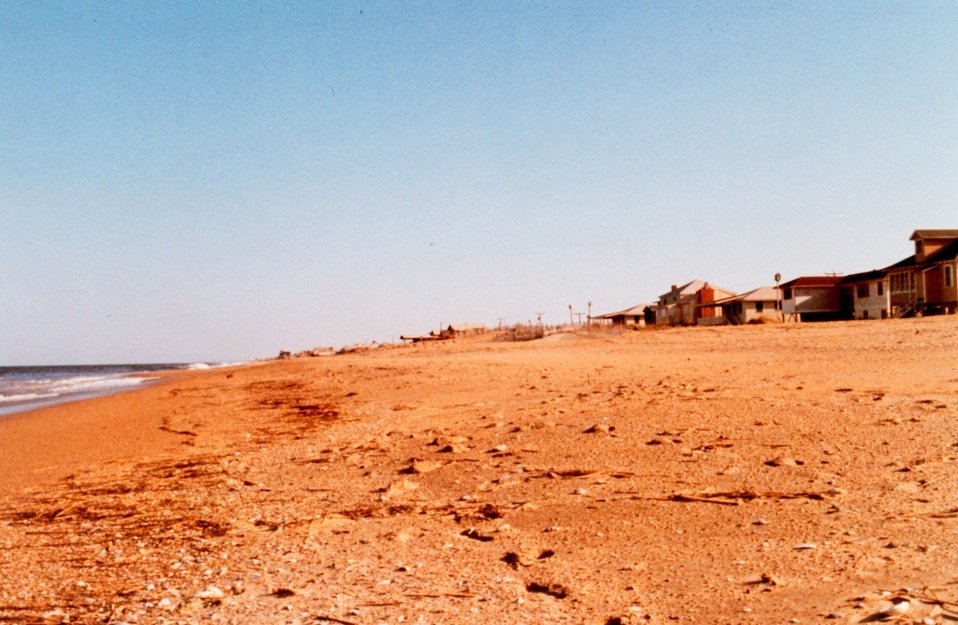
Summer homes on a deserted winter beach